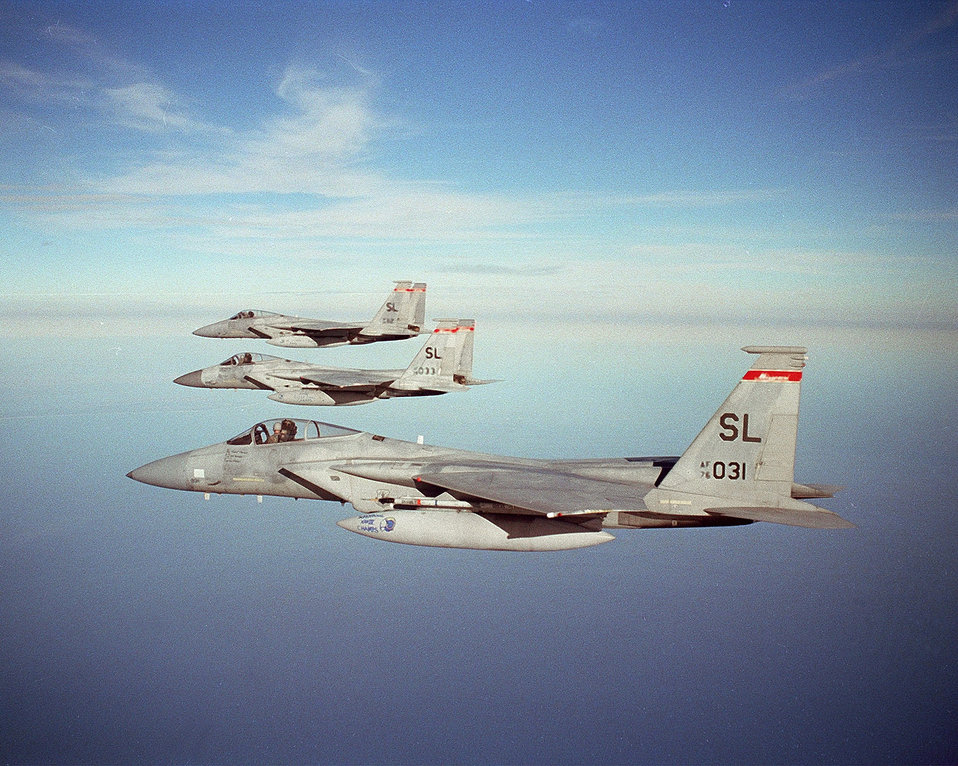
Eagle trio

FILE PHOTO -- A three-ship formation of F-15As from the 110th Fighter Squadron, 131st Fighter Wing, St. Louis Air National Guard, during a Weapons System Evaluation Program. The F-15 Eagle is an all-weather, extremely maneuverable, tactical fighter designed to gain and maintain air superiority in aerial combat. The Eagle's air superiority is achieved through a mixture of maneuverability and acceleration, range, weapons and avionics.